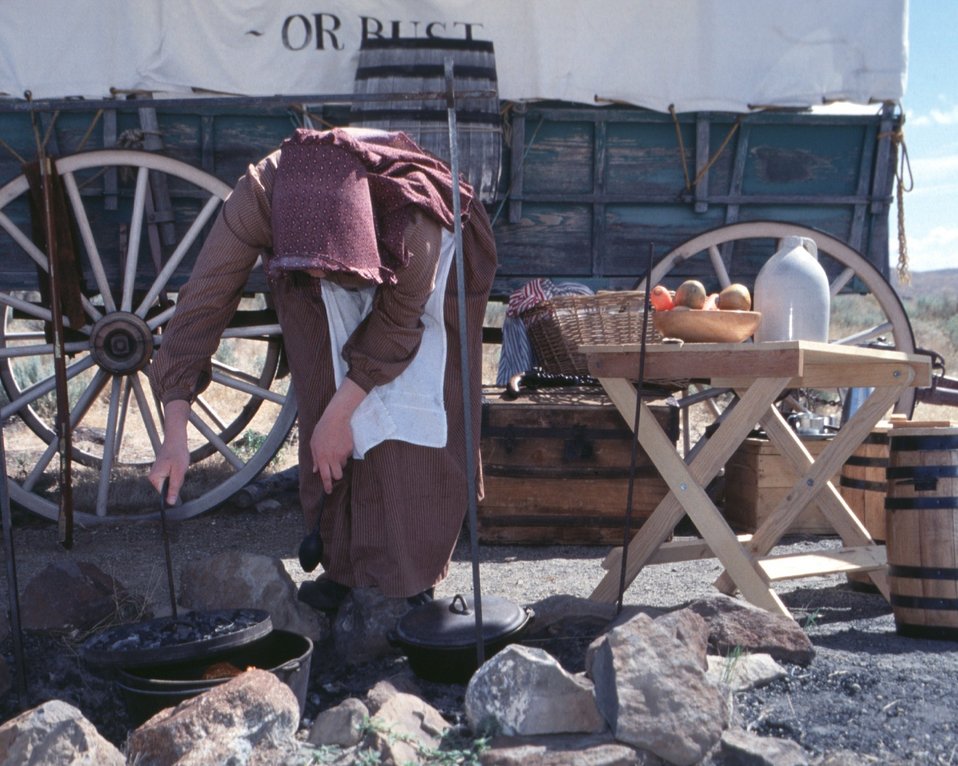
Rebecca Crow portrays a pioneer woman cooking on the Oregon Trail.